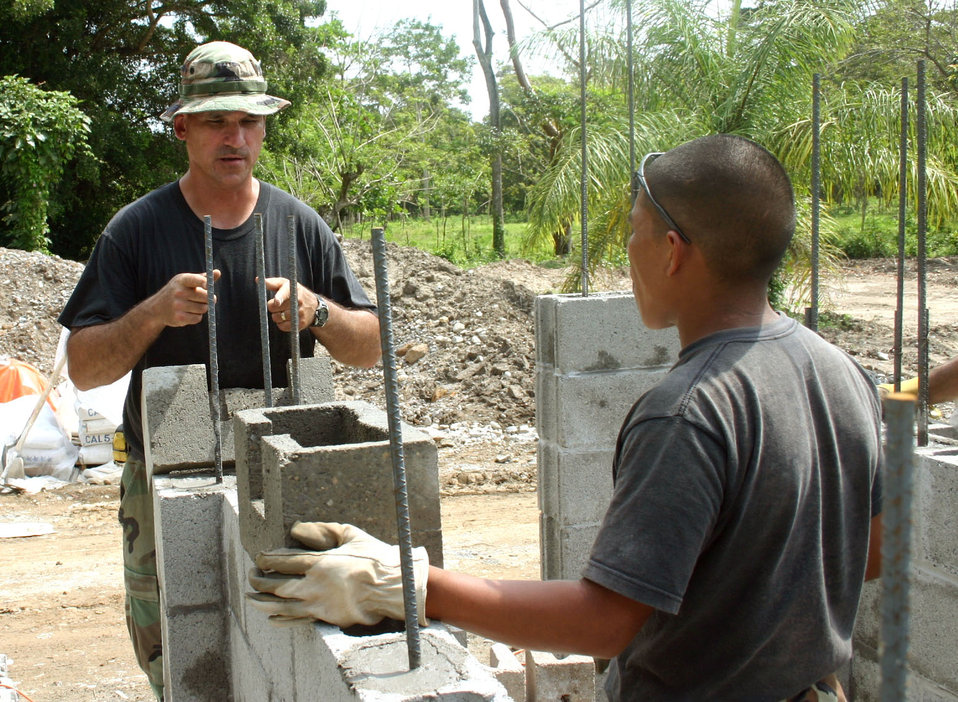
Alaskan team build school in Honduras

Master Sgt. Brad Johnson talks to Rutilio Mendez, a Honduran engineer, about some cuts that need to be made to a concrete block before it can be placed. Sergeant Johnson is one of 17 Airmen deployed from the 354th Civil Engineer Squadron at Eielson Air Force Base, Alaska, in support of New Horizons 2006-Honduras. The 354th is building a three-classroom school in the small village of El Cacao, Honduras.